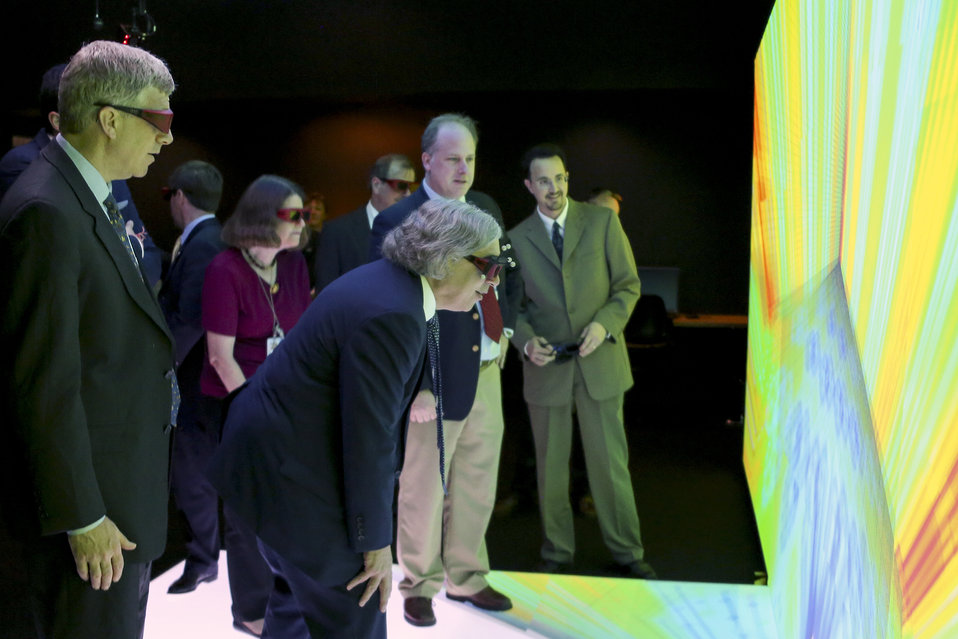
Deputy Secretary of Energy Daniel Poneman and Secretary of Energy Ernest Moniz tour the Consortium for Advanced Simulation of Light Water Reactors (CASL) Facility at Oak Ridge National Laboratory on June 3, 2013.